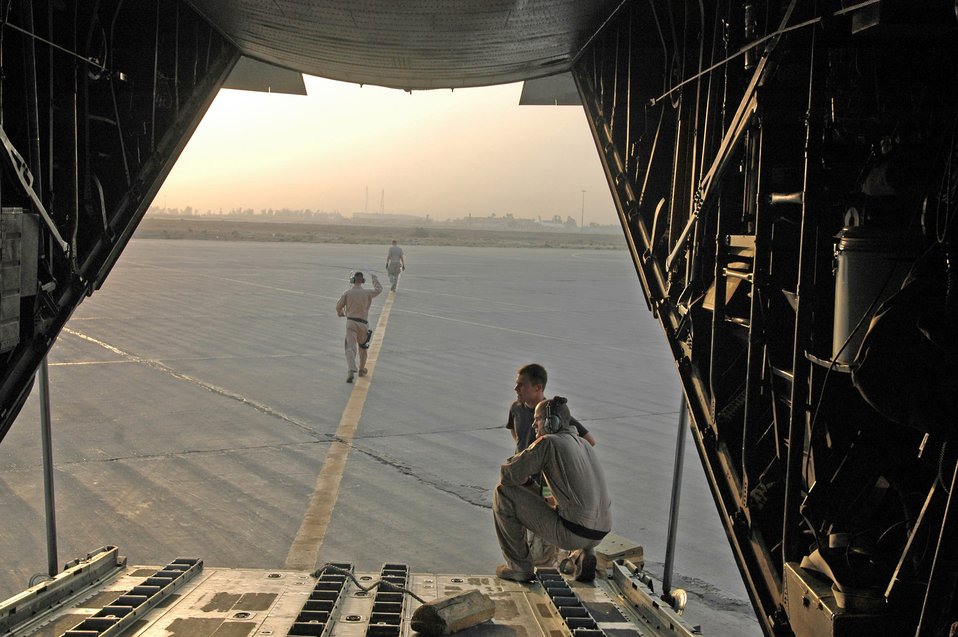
Loadmasters: night life of C-130 mission hackers

Airman 1st Class Zachary Kelhi (kneeling) and Staff Sgt. Tommy Greeness watch the sun rise over Baghdad International Airport after a long night of delivering cargo and making airdrops over Iraq. This was the last stop on their mission prior to flying back to the 379th Air Expeditionary Wing home base in Southwest Asia.